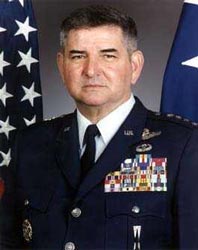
General Ronald R. Fogleman

1990's -- General Ronald R. Fogleman